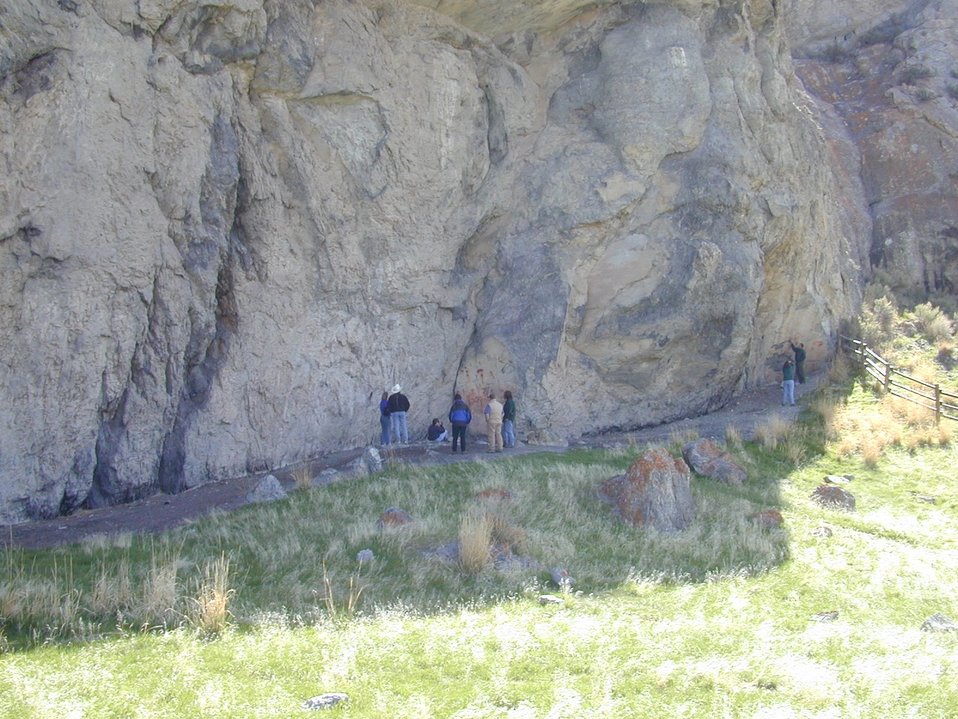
Birch Creek Valley Idaho Falls Field Office USRD Upper Snake River District